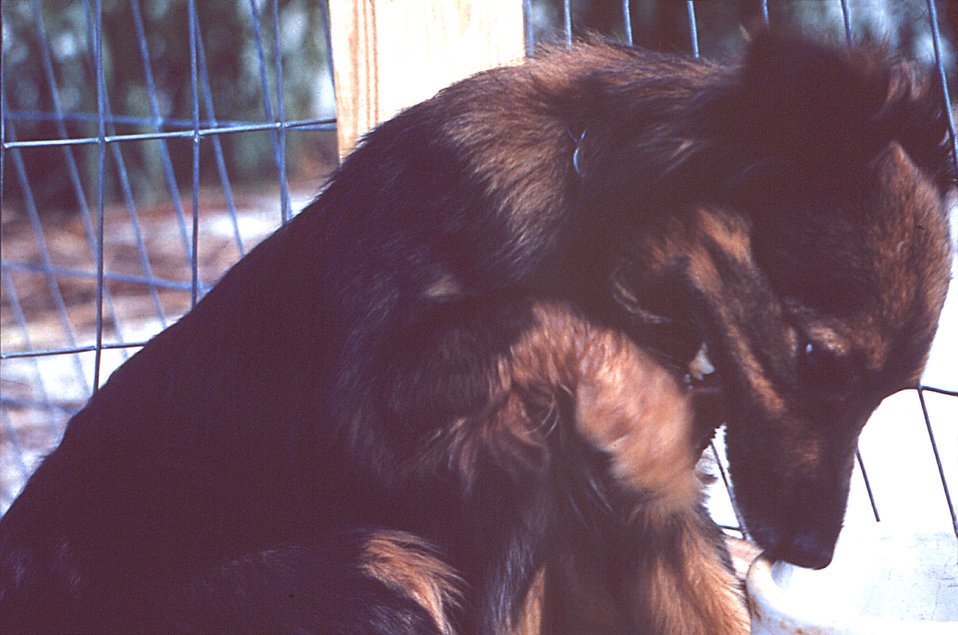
Here a penned dog is afflicted with dumb rabies, manifested as depression, lethargy and a seemingly overly tame disposition.